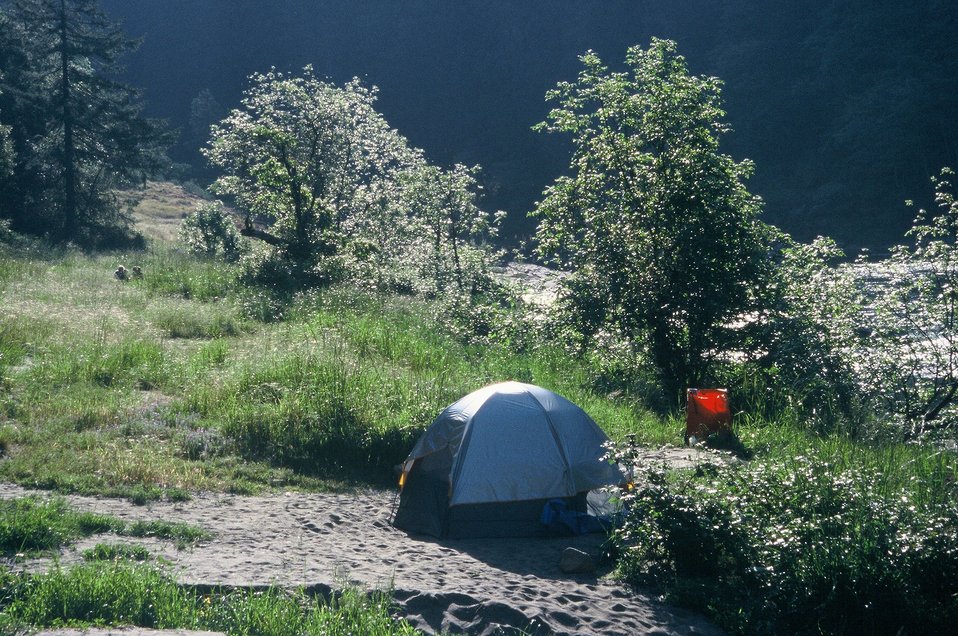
Wild section of the Rogue River from Grave Creek to Foster Bar May 19 to May 22.